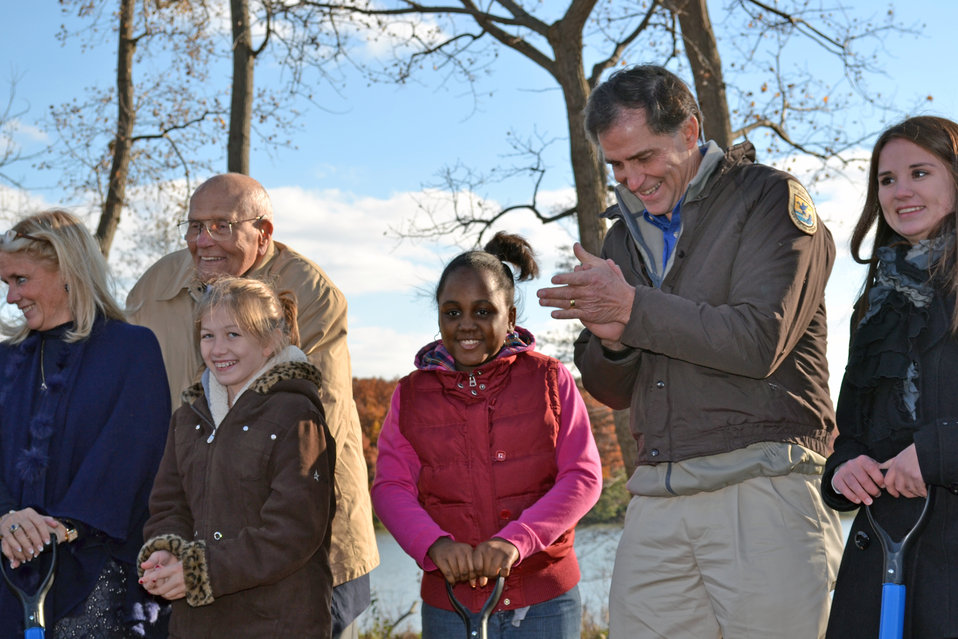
Happy to mark the day

Detroit River International Wildlife Refuge groundbreaking celebration.